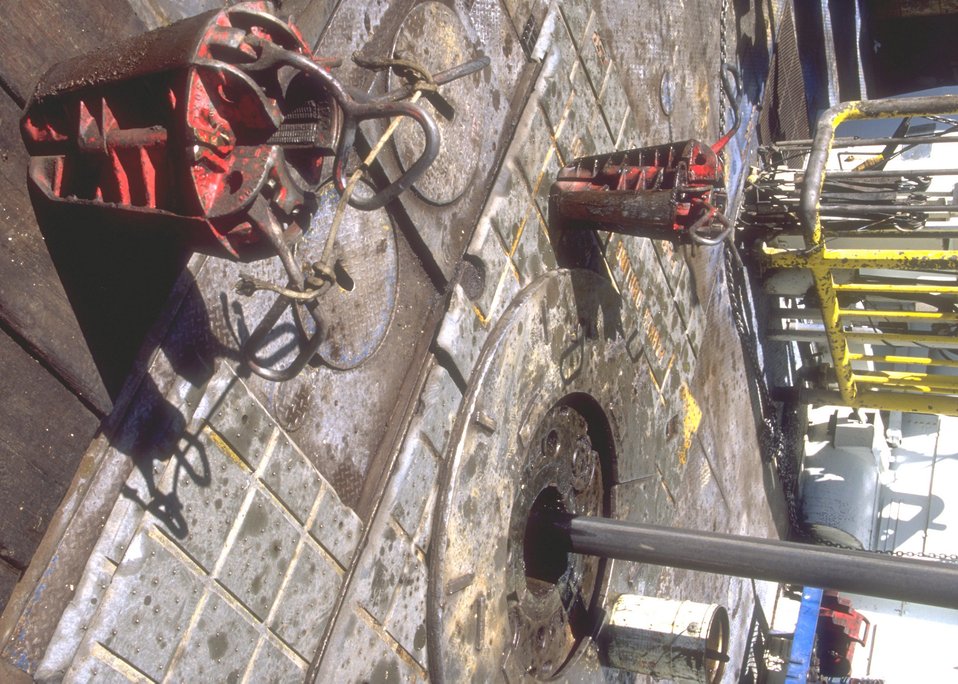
View of drill hole and attendant facilities on the Burlington Northern deep well rig, Casper Field Office.